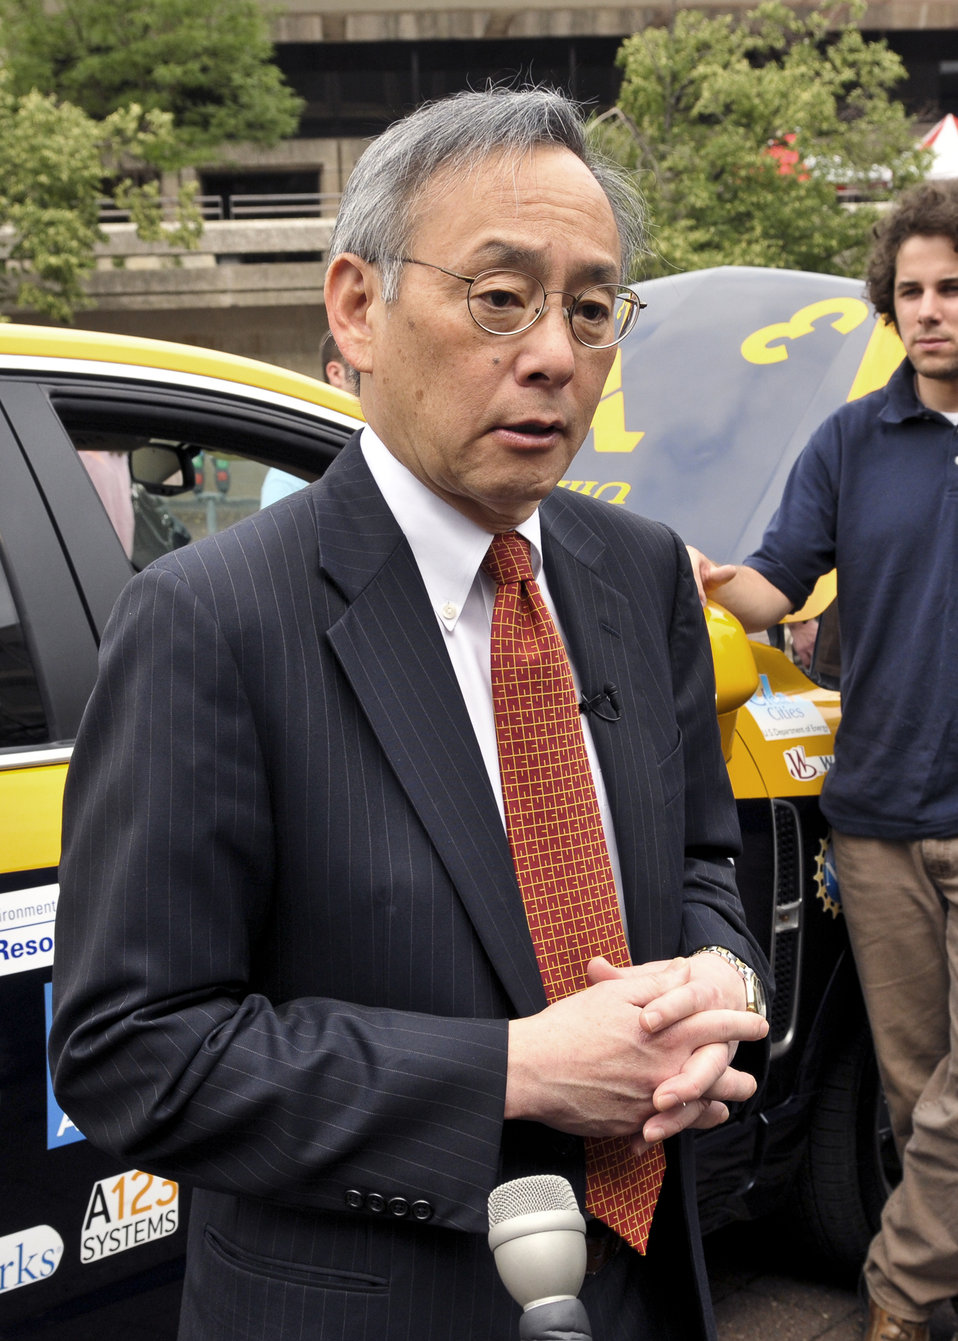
EcoCAR Challenge Finish Line 4 of 8

Secretary Steven Chu discusses the EcoCAR Challenge during the 'Finish Line' event held at the US Department of Energy headquarters in Washington, DC.